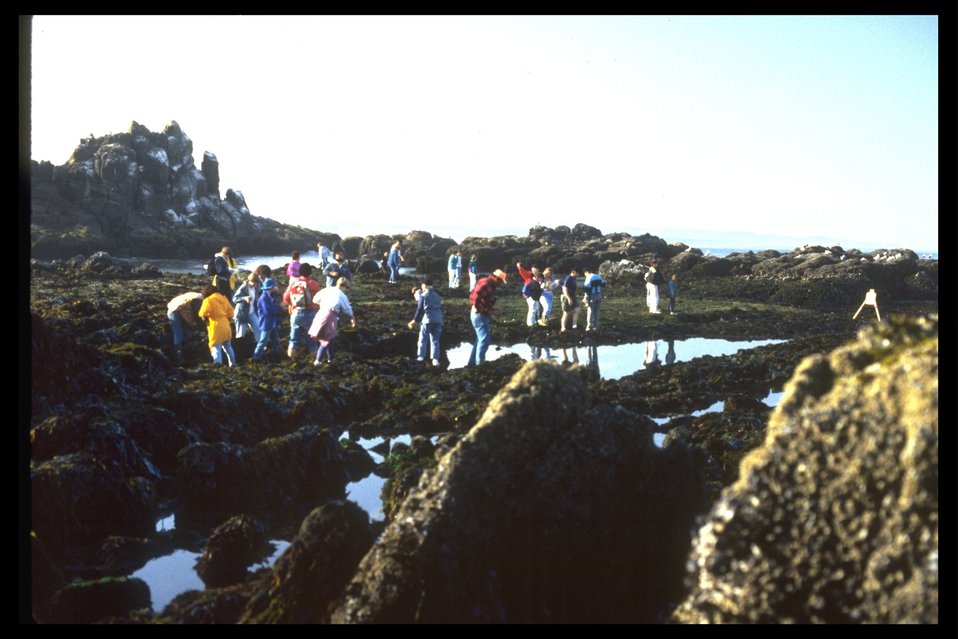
Tidepooling at Cobble Beach.